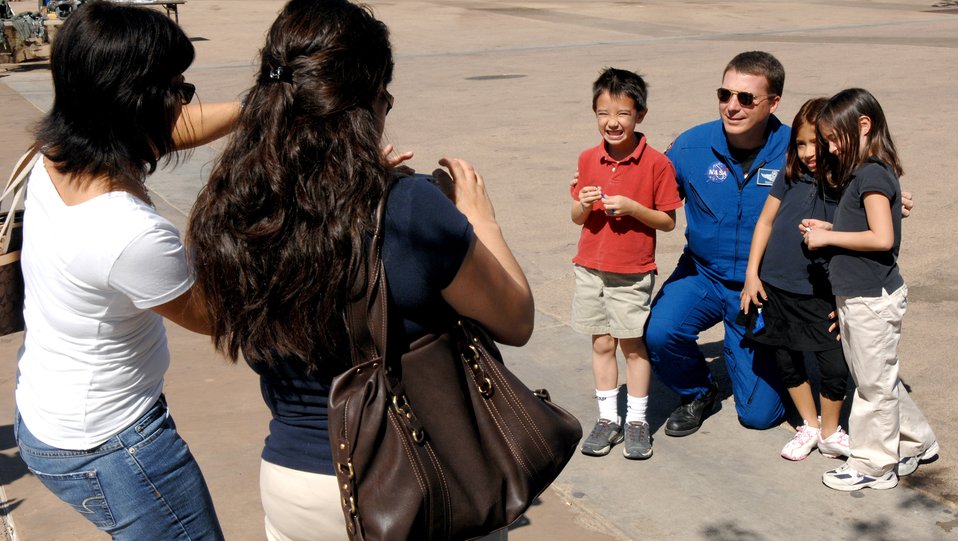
Air Force Week displays highlight airpower

NASA Astronaut Lt. Col. Terry Virts pauses for a photograph March 20 during Air Force Week at the Arizona Science Center in downtown Phoenix. Colonel Virts signed autographs and answered questions about his role as an astronaut and Air Force member.